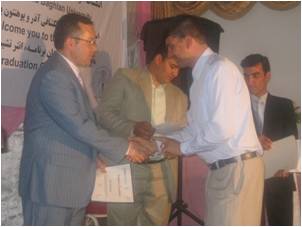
Interns Gain Experience